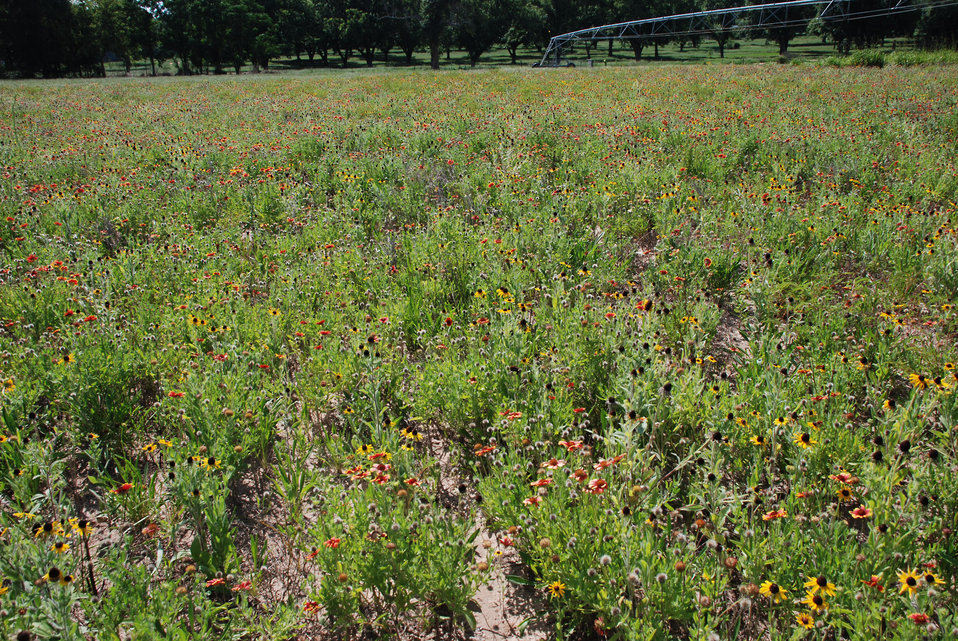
Wildflower Week photo (2)

In northern Florida wildflowers are planted in an unused part of this farm field to provide habitat for pollinators. More than a third of the world’s food crops are dependent on pollinators to produce fruit. The U.S. Department of Agriculture‘s (USDA) Natural Resources Conservation Service (NRCS) is promoting planting of wildflowers on farms and ranches. Several of the Farm Bill programs that USDA NRCS administers have specific financial incentives tied to planting wildflowers.